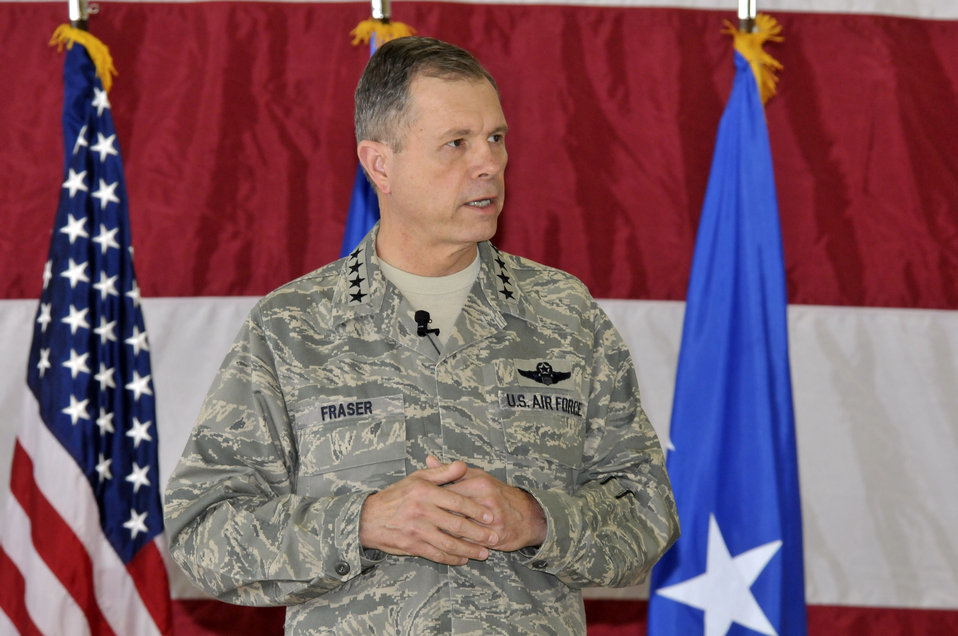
Top ACC leader visits Tyndall

Gen. William M. Fraser III addresses members of 1st Air Force during a visit Jan. 29, 2010, to Tyndall Air Force Base, Fla. General Fraser is the commander of Air Combat Command.